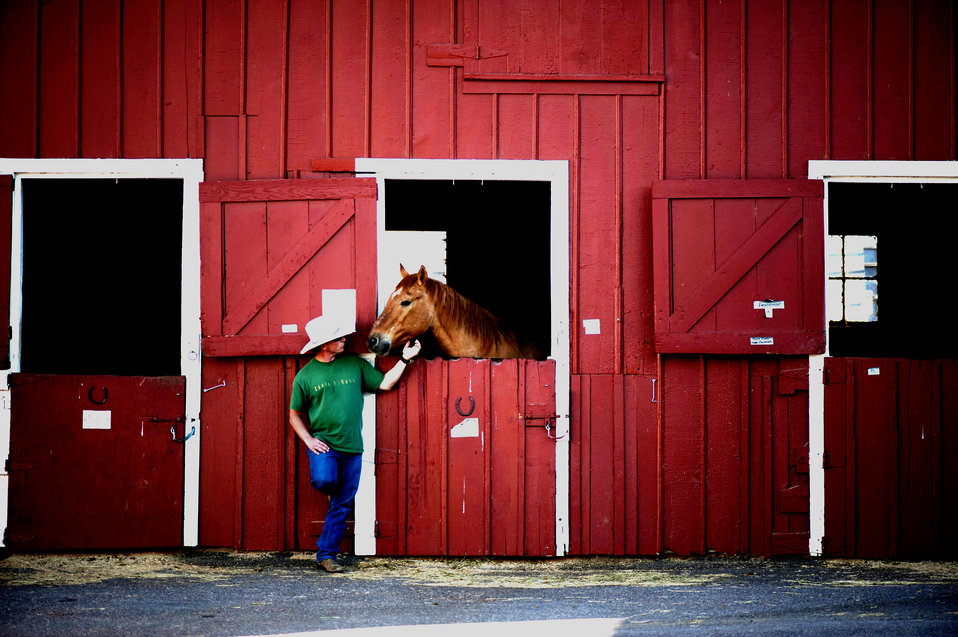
Warrior Wellness Program

U.S. Army Sgt. Dale Chick pets a horse at the equestrian center April 27, 2012, at the U.S. Air Force Academy in Colorado Springs, Colo. Chick said volunteering at the stables and working with horses helps him find inner peace and comfort after being deployed in Iraq and Afghanistan.